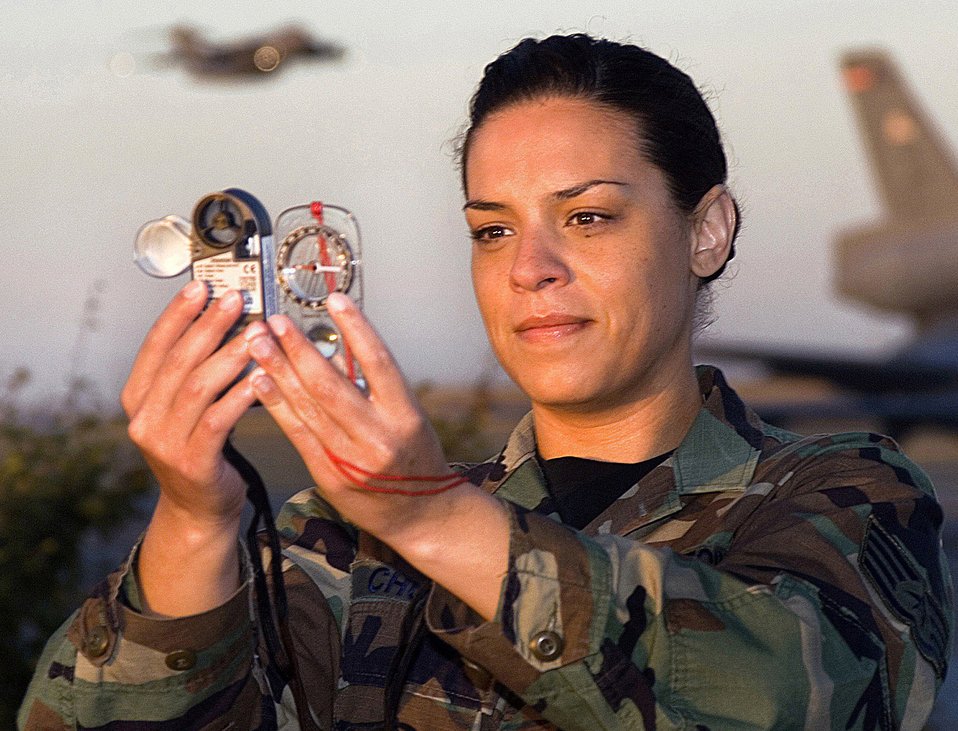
It's a good weather day

Using a portable wind meter, Staff Sgt. Rebecca Church takes a reading at Travis Air Force Base, Calif. The instrument measures wind speed, temperature and atmospheric pressure. Sergeant Church is a combat weather forecaster for the 60th Operations Support Squadron.